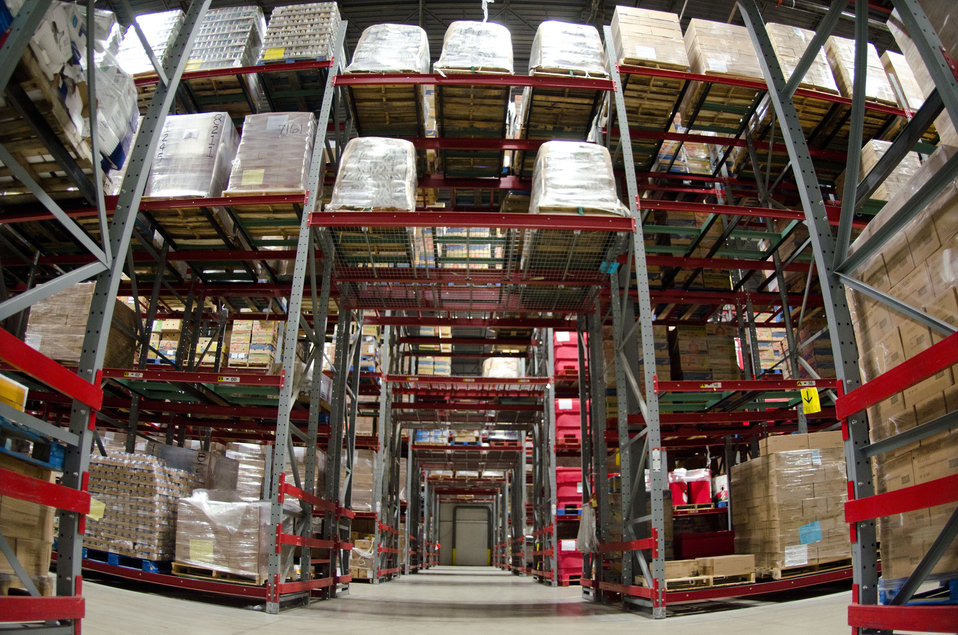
The United States Department of Agriculture donated commodities such as The Emergency Food Assistance Program (TEFAP), are just some of the many sources that make up the more than 44 million pounds of food that flow in and out of the warehouse of the San Antonio Food Bank (SAFB) they package and palletize them for fast distribution from its San Antonio, TX., headquarters, on Monday, October 31, 2011. SAFB is a non-profit organization that serves as a clearinghouse by receiving and storing truckloads of donated food, produce, and other grocery products, they then distributes these items to over 500 service agencies that help people in need.
“We couldn’t do what we do without our partnership with USDA’” said President and CEO Eric Cooper. He continues, “We are privileged in partnering (with the USDA) to feeding kids, through the summer, with the Summer Food Service Program, and throughout the year, with the Child and Adult Care Feeding Program (CACFP). Then in our approach to feeding seniors, we partner with USDA in the Commodities Supplemental Food Program (CSFP), and the Senior Farmer’s Market (Nutrition) Program. And then work to bring all our (needy) parties together with our Supplemental Nutrition Assistance Program (SNAP) Outreach. You know, once families have access to food we believe it is important to educate them. Through the support of the SNAP-Education Program we are able to educate them during their time of need. With this comprehensive approach we are really able to get the right food, at the right amount, at the right time, to needy families throughout our community – which allows us to feed the fifty-eight thousand we do, each week.”
SAFB serves 16 counties in Southwest Texas and states, “Nearly one out of every four children and one out of every five adults in Southwest Texas lives in poverty and has difficulty meeting basic nutritional needs.” According to SAFB, sixty-five percent of the people requesting emergency food have children. “Additionally, the senior citizens and those living on a fixed income generally have limited funds for a consistent grocery budget.”
San Antonio is the seventh largest city in the nation with surrounding farms and ranches near its rivers and water supplies. When available they provide fresh surplus produce. Other commodities come from the food industry and manufacturers. The major food brand companies that for various reasons have surplus commodities donate it to SAFB.
Texas farmers supply fresh produce to their Fresh Produce Program.
Public donations come in the form of money, food, volunteer time, and advocacy.
Their fleet of trucks pickup and deliver food as needed.